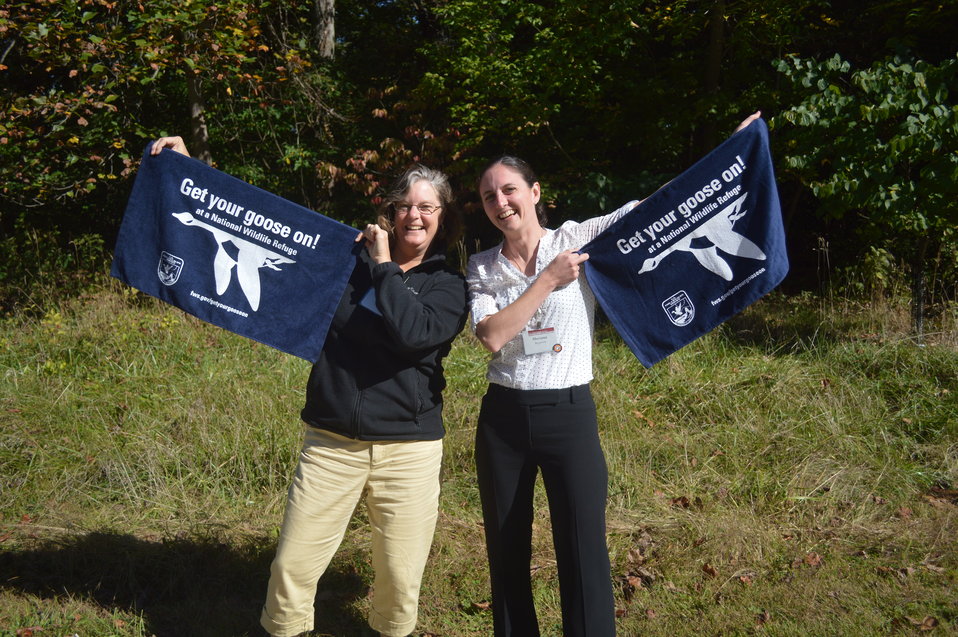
Get Your Goose On!

Photo taken at the National Conservation Training Center in Shepherdstown, WV.

Credit: Ryan Moehring / USFWS

#GetYourGooseOn